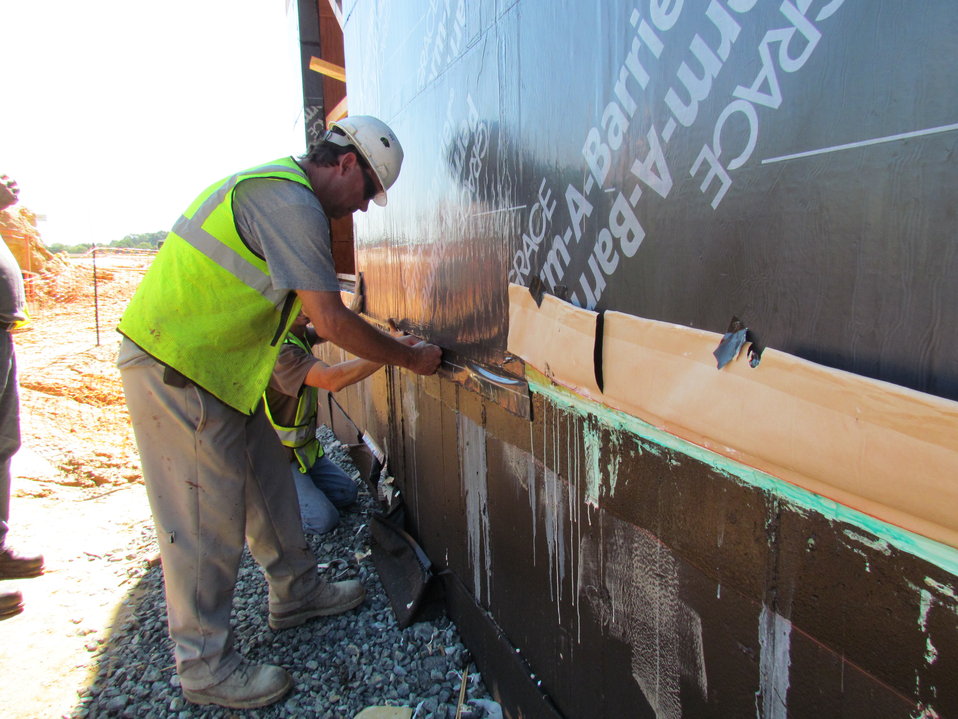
Net-Zero Energy Residential Test Facility - Detail of how air/moisture barrier is adhered to concrete basement wall.